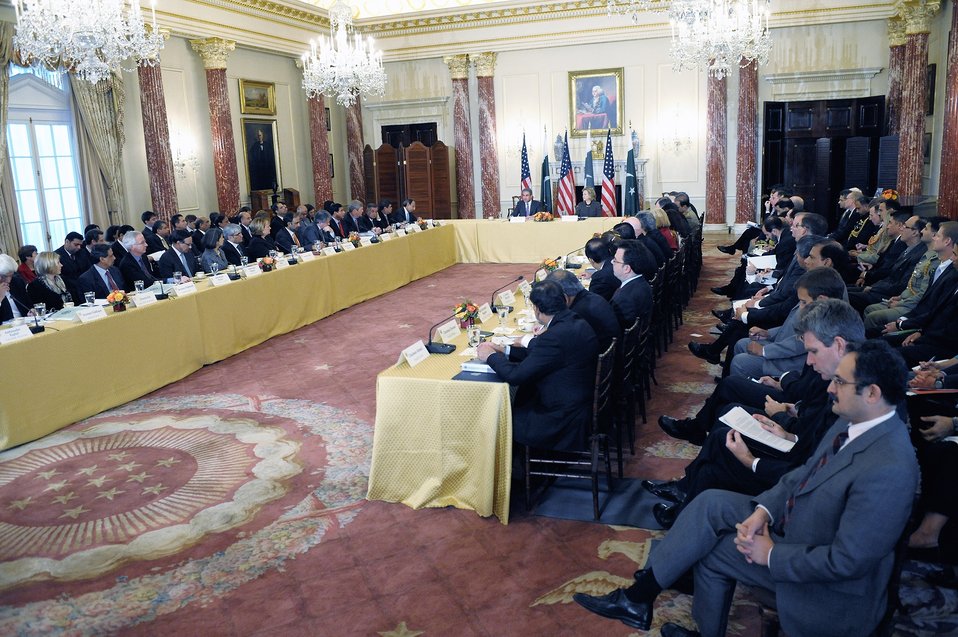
Secretary Clinton and Pakistani Foreign Minister Qureshi Open the U.S.-Pakistan Plenary Session

U.S. Secretary of State Hillary Rodham Clinton and Pakistani Foreign Minister Shah Mahmood Qureshi deliver opening remarks at the U.S.-Pakistan Dialogue Plenary Session at the U.S. Department of State in Washington, DC October 21, 2010. [Public Domain/ Public Domain]